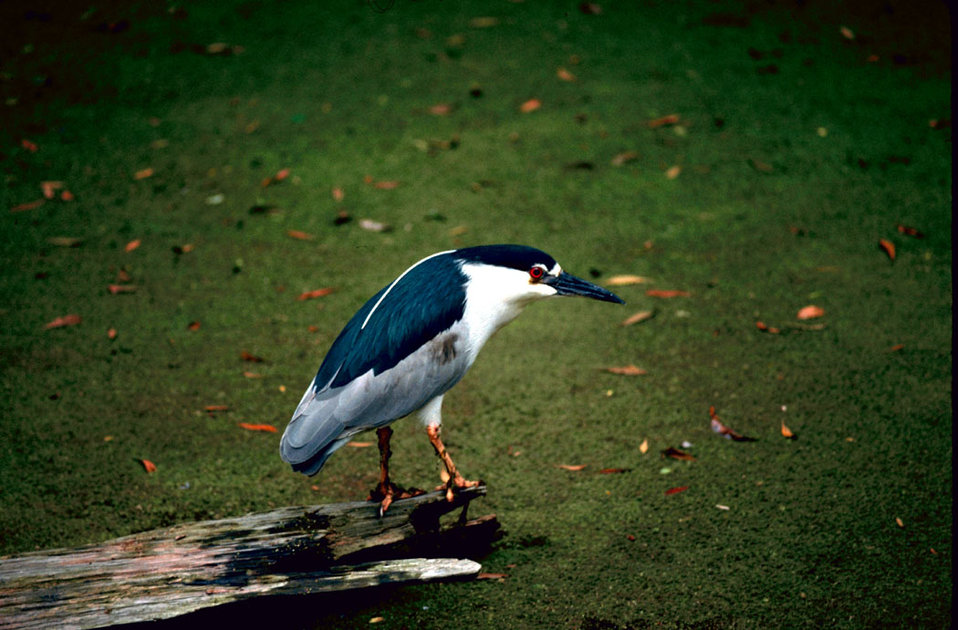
Black-Crowned Night Heron

The black-crowned night heron is just one of the species at Blackwater National Wildlife Refuge that could be affected by climate change and sea level rise.